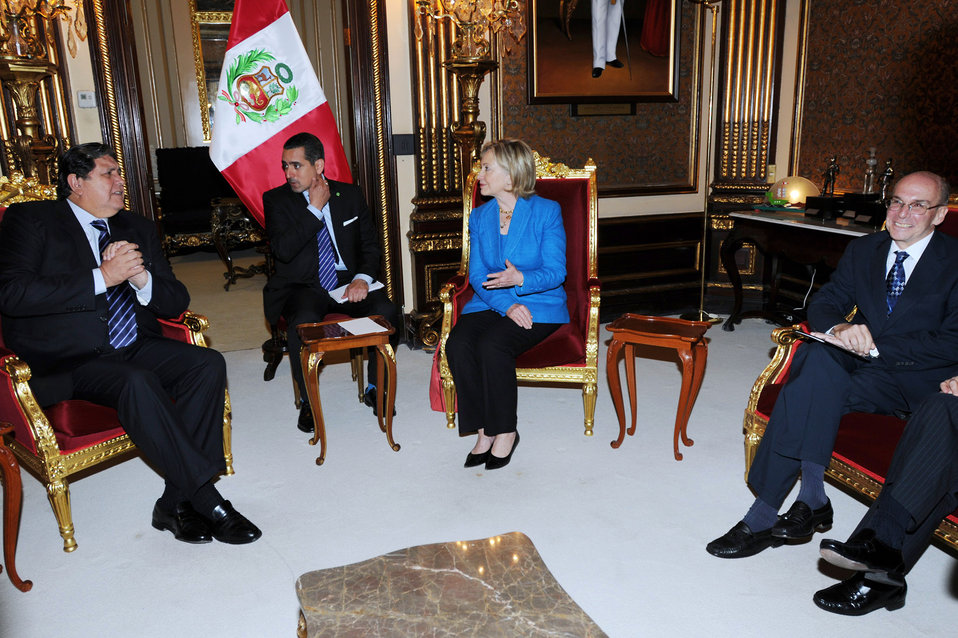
Secretary Clinton Meets With Peruvian President

U.S. Secretary of State Hillary Rodham Clinton meets with Peruvian President Alan Garcia (far left) and U.S. Ambassadr to Peru Ambassador Michael McKinley (far right) at the Government Palace in Lima, Peru June 7, 2010.